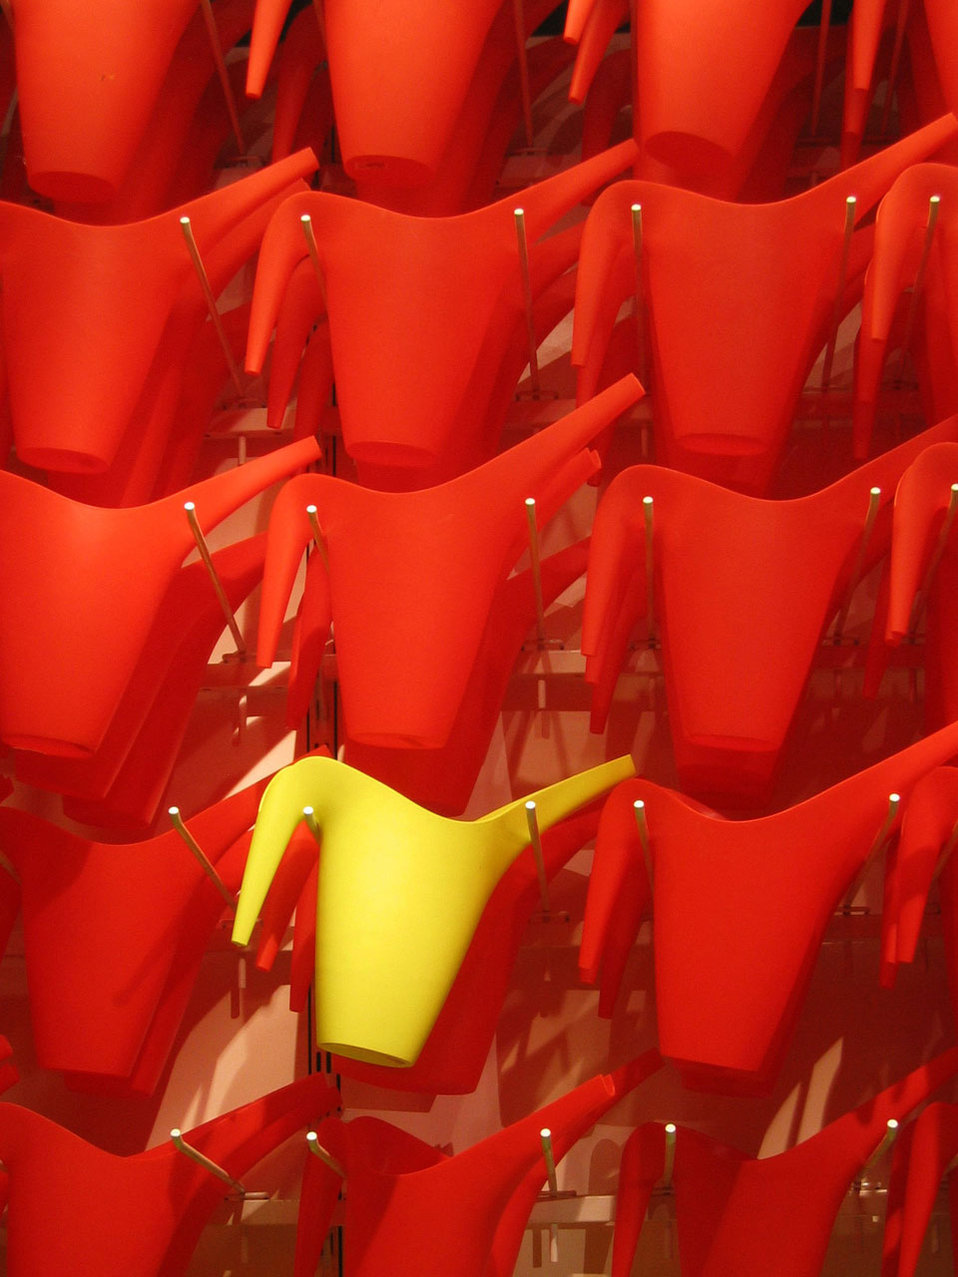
One yellow one

One yellow watering can in a display of red ones.